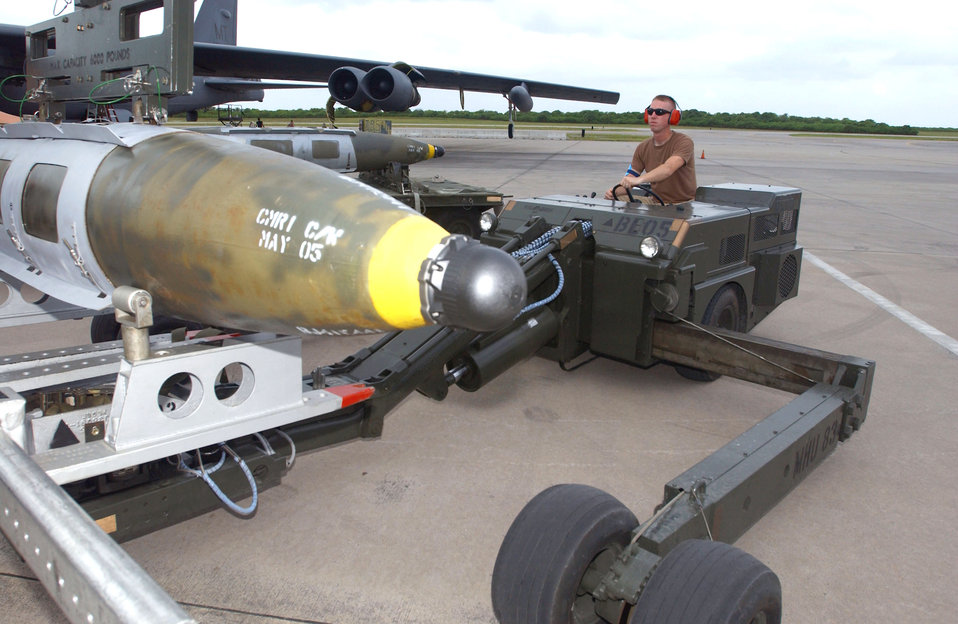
B-52 aids ground troops under small arms fire

OPERATION ENDURING FREEDOM -- Airman 1st Class Marcus Thames moves a joint-direct attack munition that will be loaded on a B-52 Stratofortress. He is a weapons loader with the 40th Expeditionary Maintenance Squadron at a forward-deployed location and is from Minot Air Force Base, N.D.